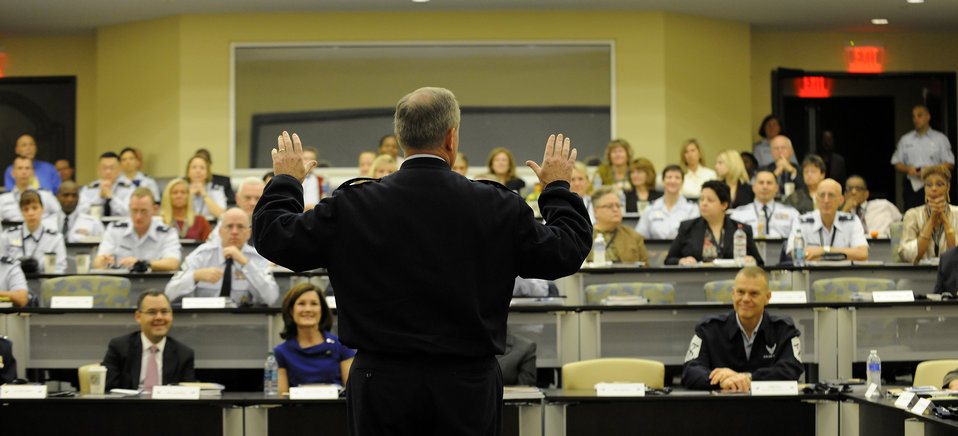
Caring for People

Air Force Chief of Staff Gen. Mark A. Welsh III makes opening remarks for attendees of the Caring for People forum at Joint Base Andrews, Md., on Sept. 26, 2012. This is the fourth annual forum which recognizes Air Force-wide Key Spouses and provides strategies for helping Airmen and their families.